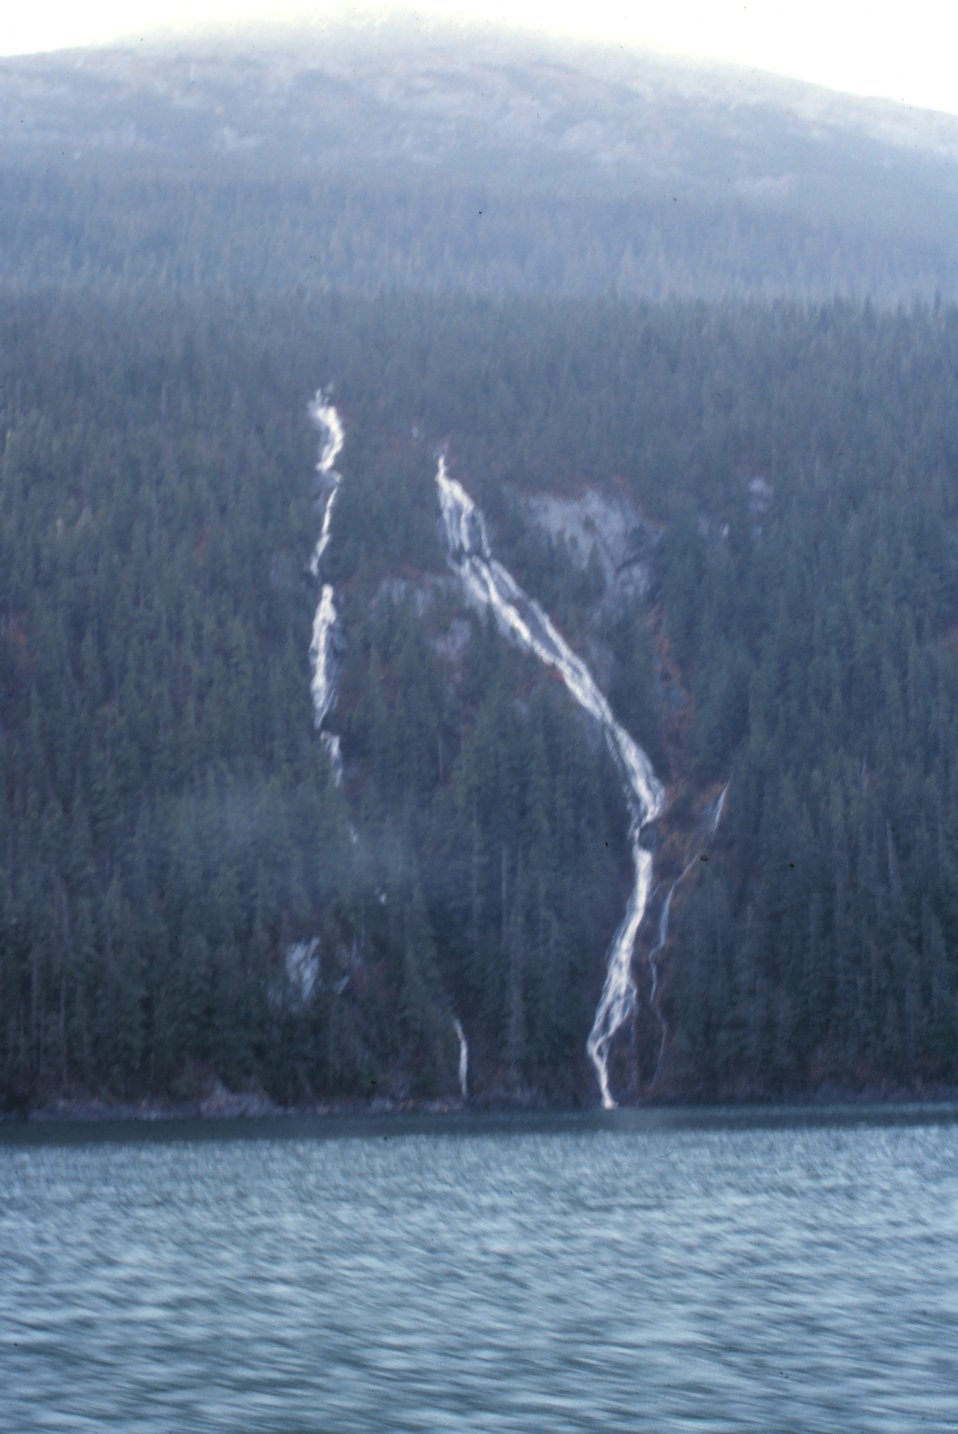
Waterfalls abound throughout Tracy Arm Fjord